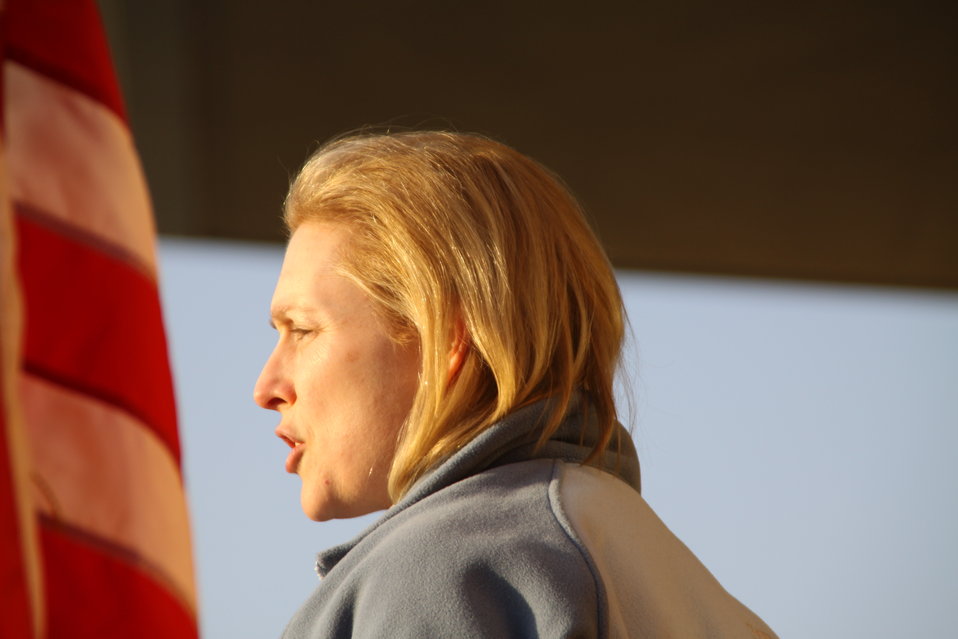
Senator Gillibrand